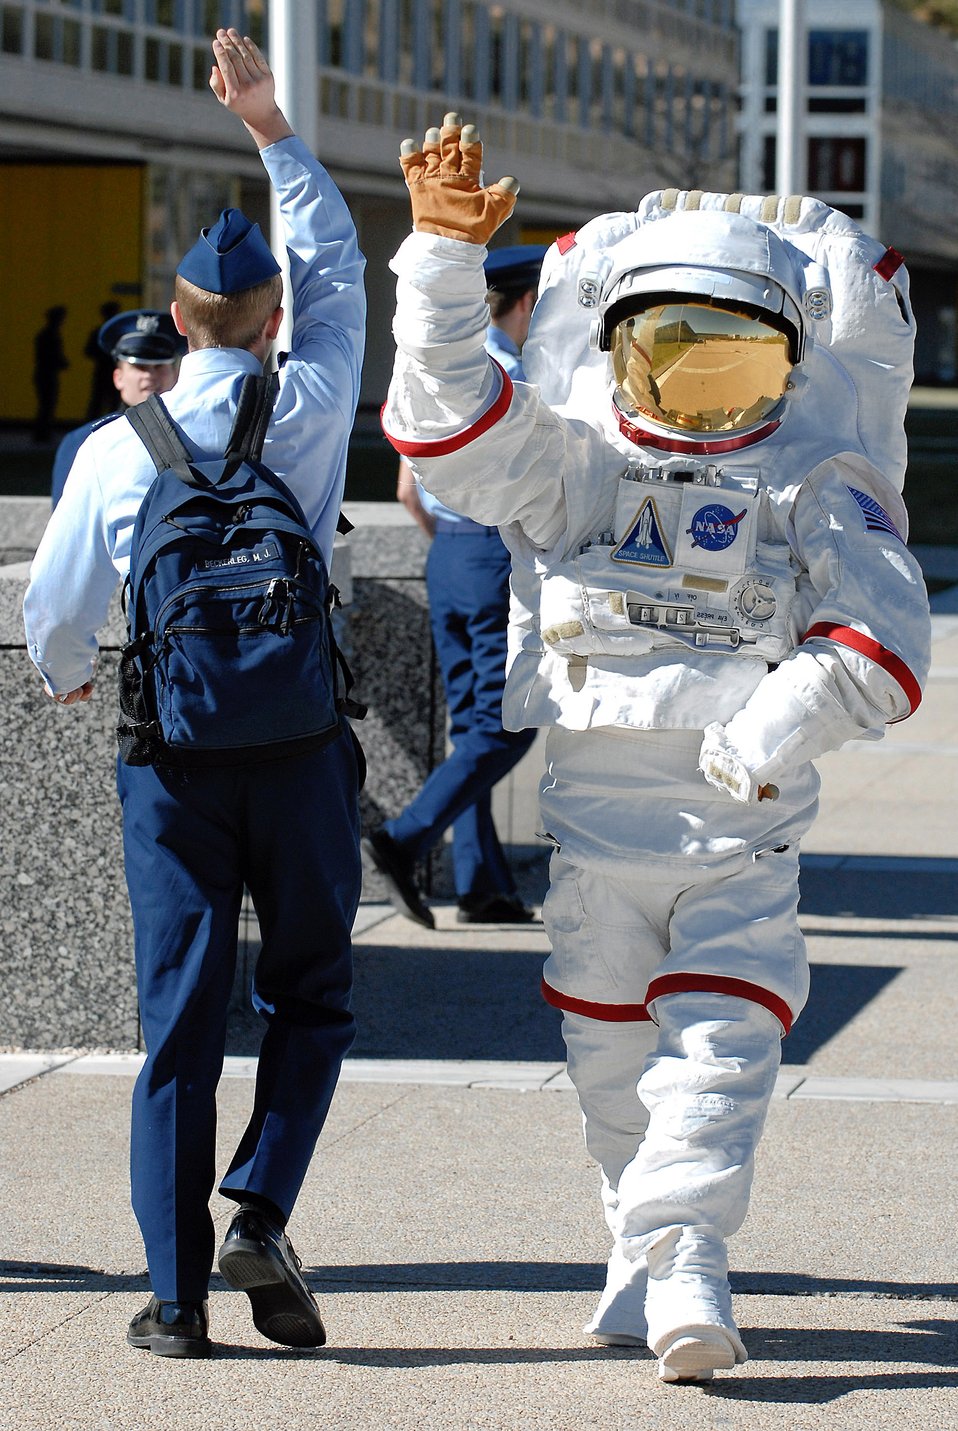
High five

U.S. Air Force Academy Cadet Matthew Beckerleg high fives